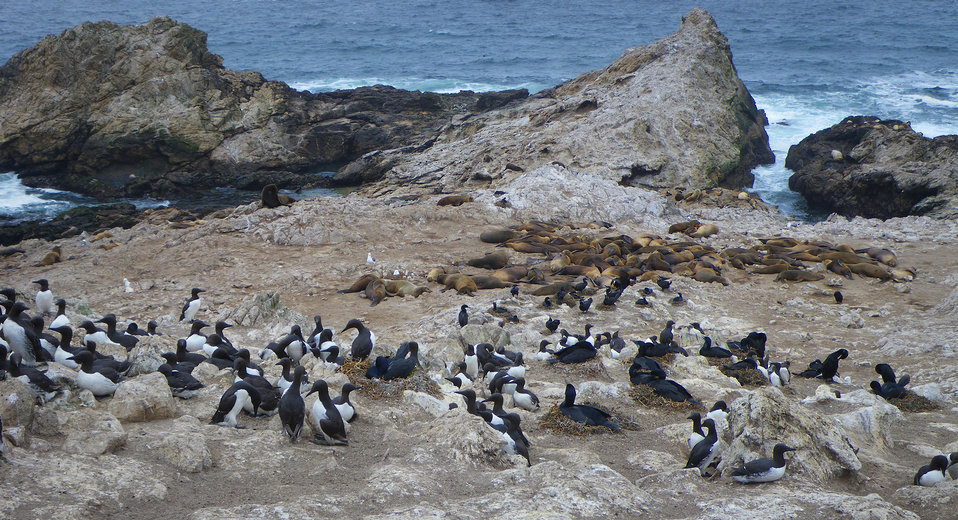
Common Murre and California Sea Lions

Five species of pinniped, commonly referred to as seals, come to shore on the islands, and in some cases breed. These are the northern elephant seal, harbor seal, Steller's sea lion, California sea lion, and the northern fur seal (the last of which, like the Rhinoceros Auklet, began to return to the island again after federal protection and establishment of the refuge).